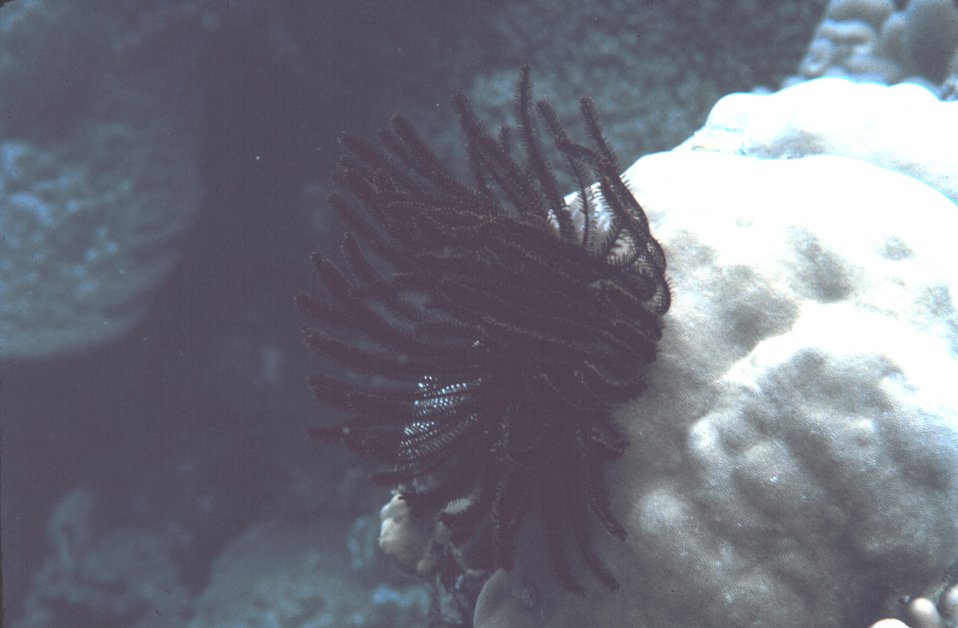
Crinoid on a coral head